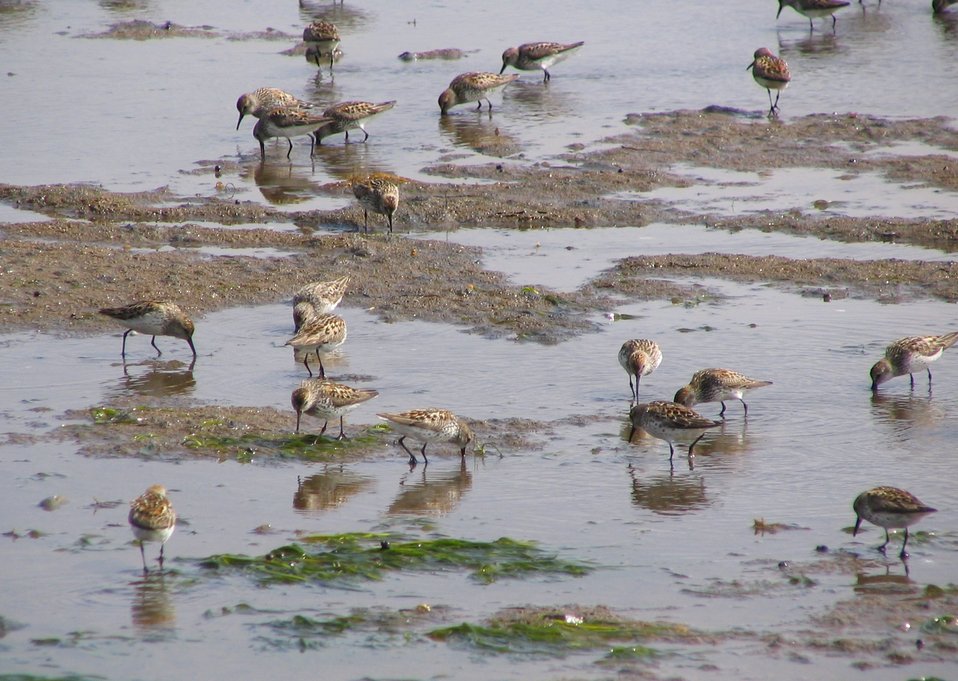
Western sandpipers and a few Rock sandpipers, Kinzarof Lagoon, Izembek National Wildlife Refuge